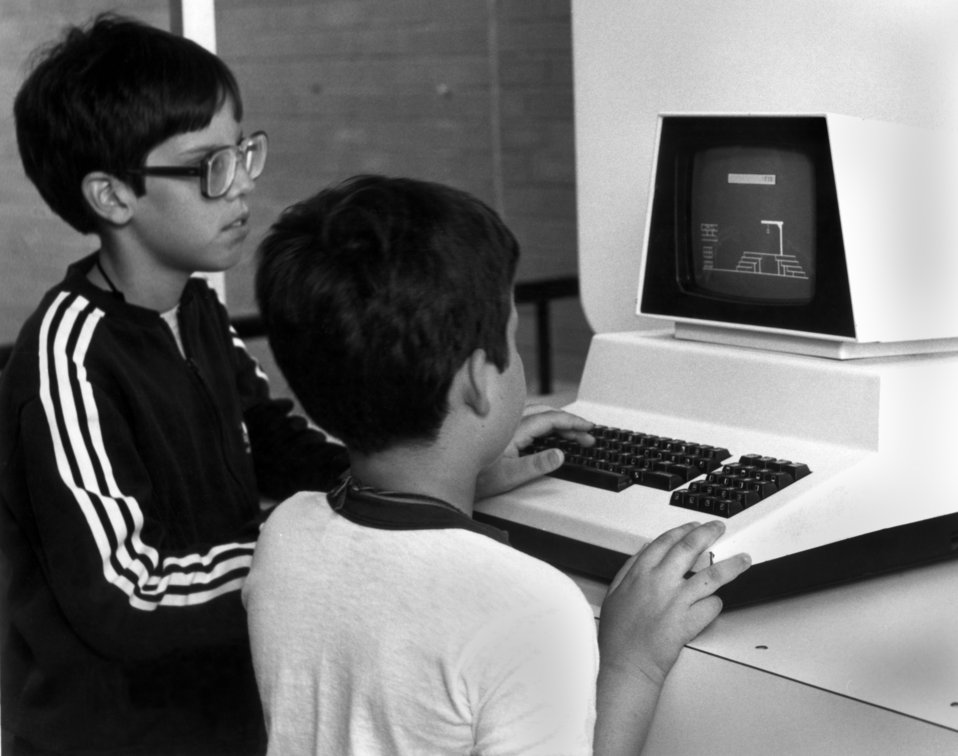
Exhibit at American Museum of Science and Energy Oak Ridge

83-841 DOE photo by Frank Hoffman

Exhibit at American Museum of Science and Energy Oak Ridge Tennessee 8-1-1983